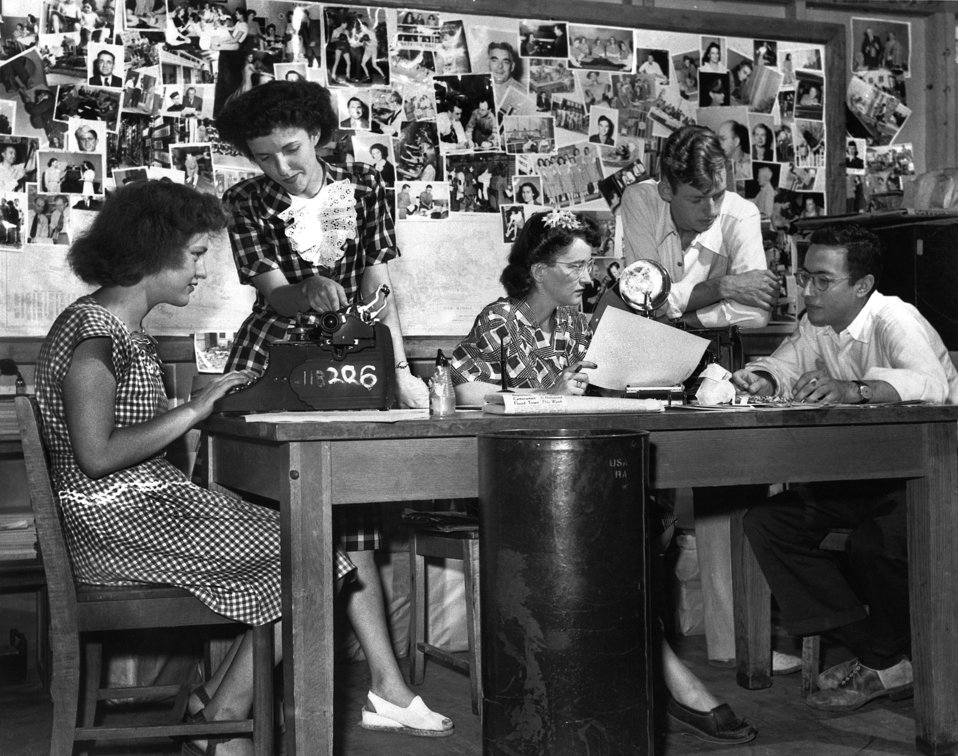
Oak Ridge Journal Staff

DOE photo 4th from the left is Ed Westcott 8-18-1945